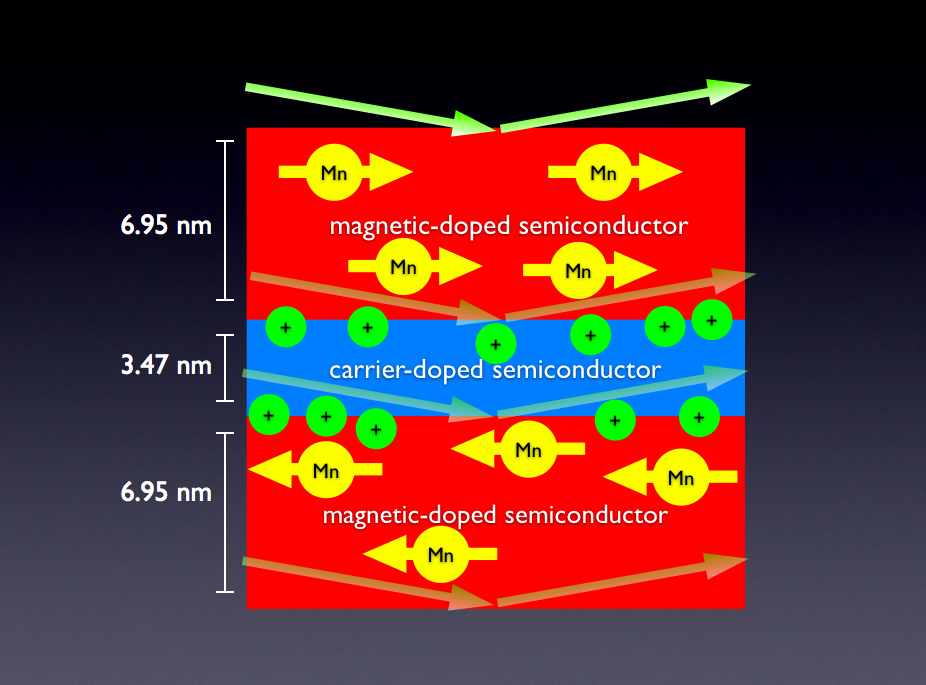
Magnetic Semiconductor

Researchers working at NIST have confirmed that thin magnetic layers (red) of a semiconductor separated by a nonmagnetic layer (blue) can exhibit a coveted phenomenon known as 'antiferromagnetic coupling,' in which manganese (Mn) atoms in successive magnetic layers spontaneously orient their magnetization in opposite directions. This discovery, made by scattering neutrons (arrows) from the material, raises the prospects of 'spintronic logic circuits' that could both store and process data.